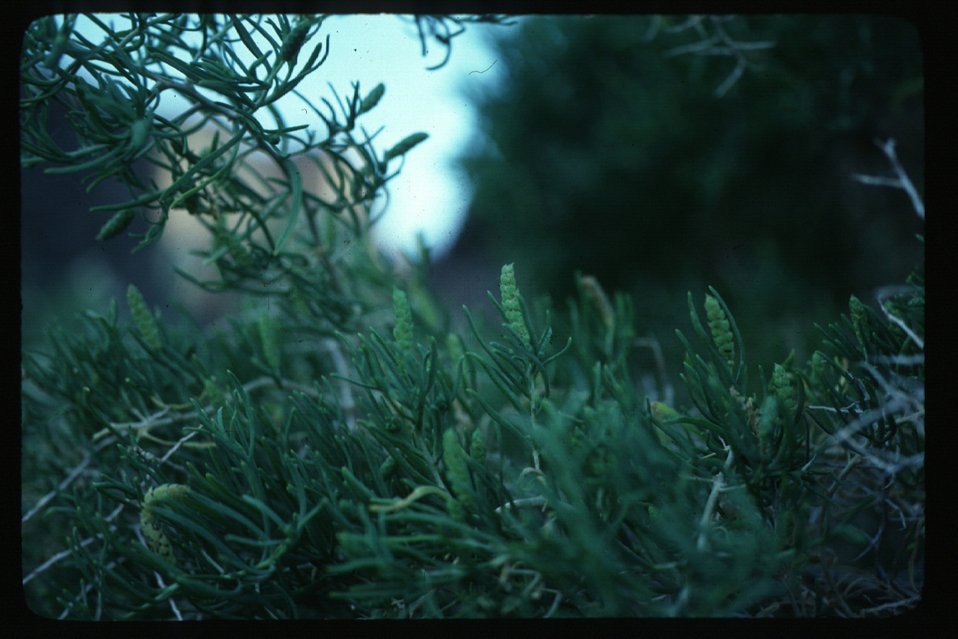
Sarcobatus vermiculates Grease Wood Brush, grasses Wildflowers